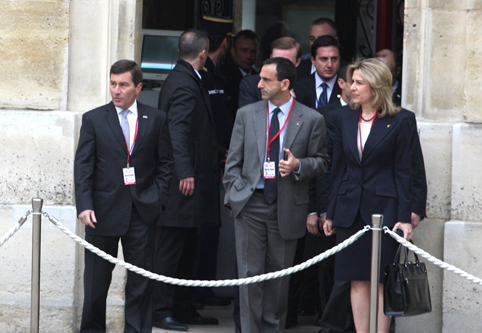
Ambassador Rivkin and Assistant Secretary Gordon Wait for Secretary Clinton To Arrive

U.S. Ambassador to France, Charles H. Rivkin (left), and U.S. Assistant Secretary of State for European and Eurasian Affairs, Philip Gordon, center, wait for U.S Secretary of State Hillary Rodham Clinton's arrival at Elysee Palace for the Crisis summit on Libya in Paris, France, on March, 19, 2011.